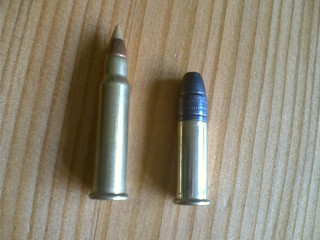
Provided by Goldsmith285